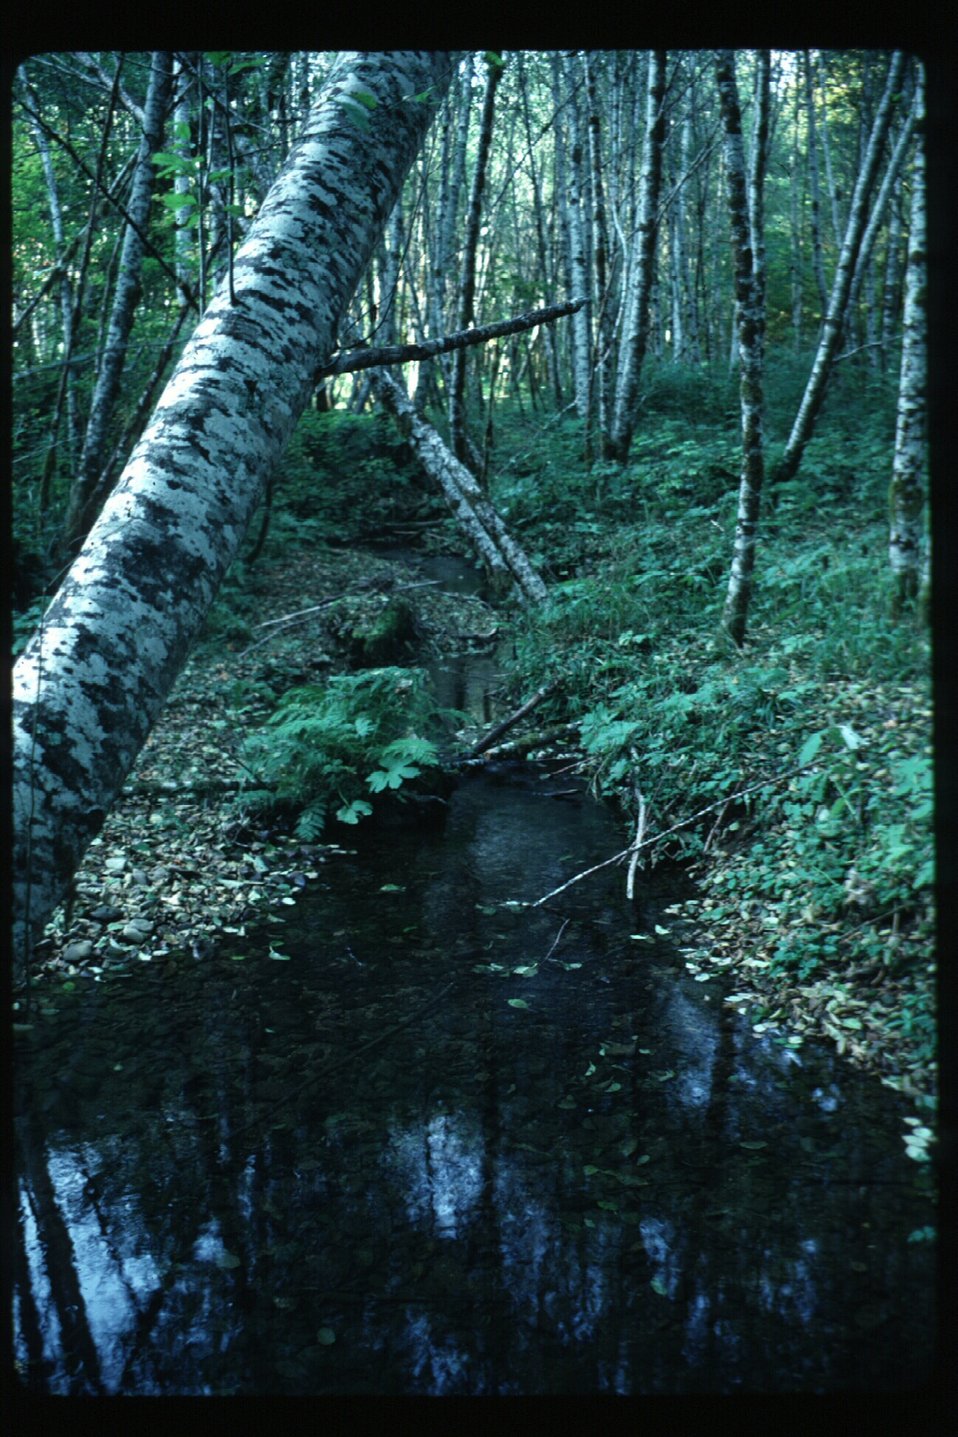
Stream Forestry Couer d'Alene Field Office UCSC Upper Columbia Salmon Clearwater